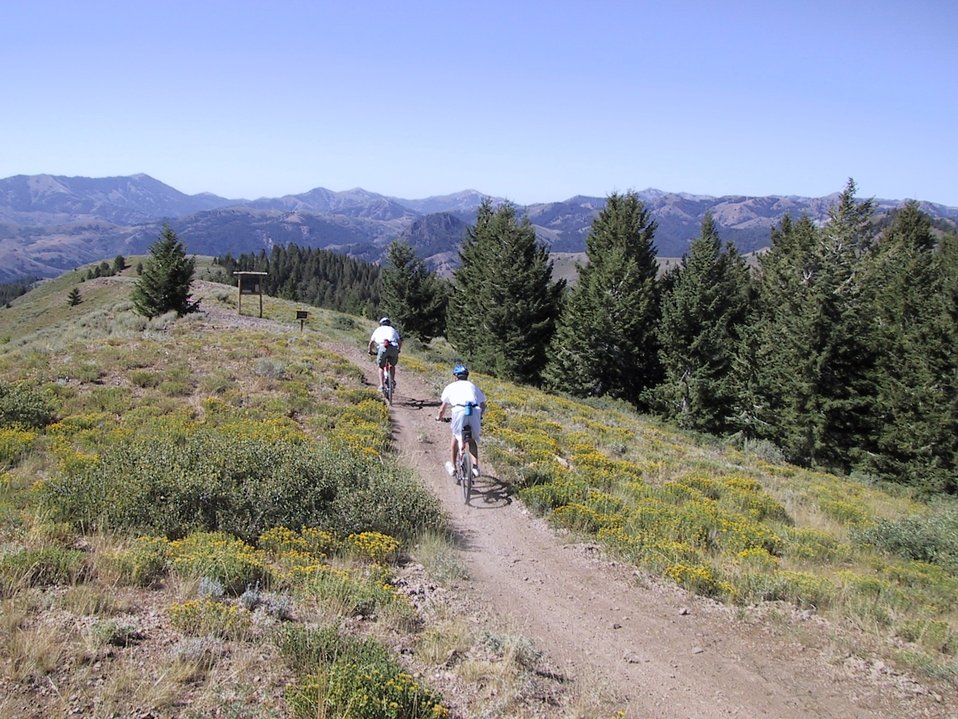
Bikers Blaine County Trails Shoshone Field Office USRD Upper Snake River District